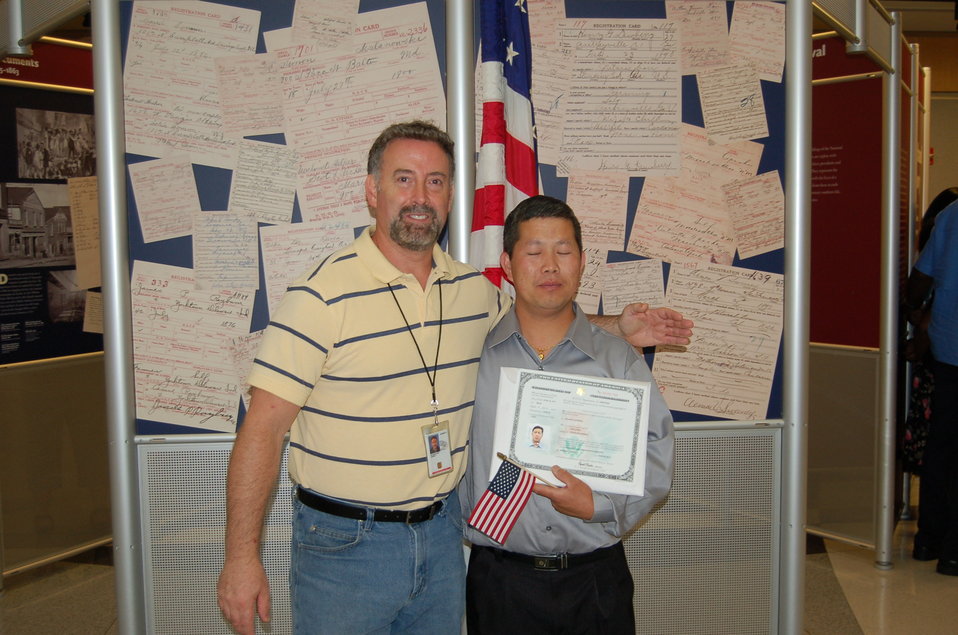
New Citizens